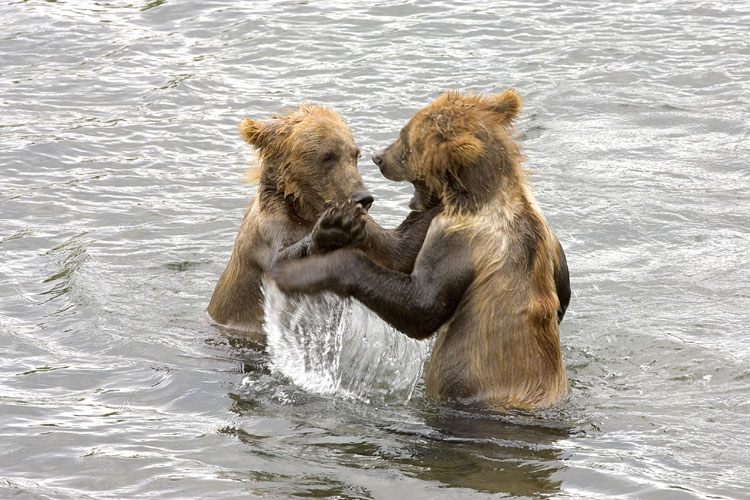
Kodiak Brown Bears

Playful Kodiak Bears